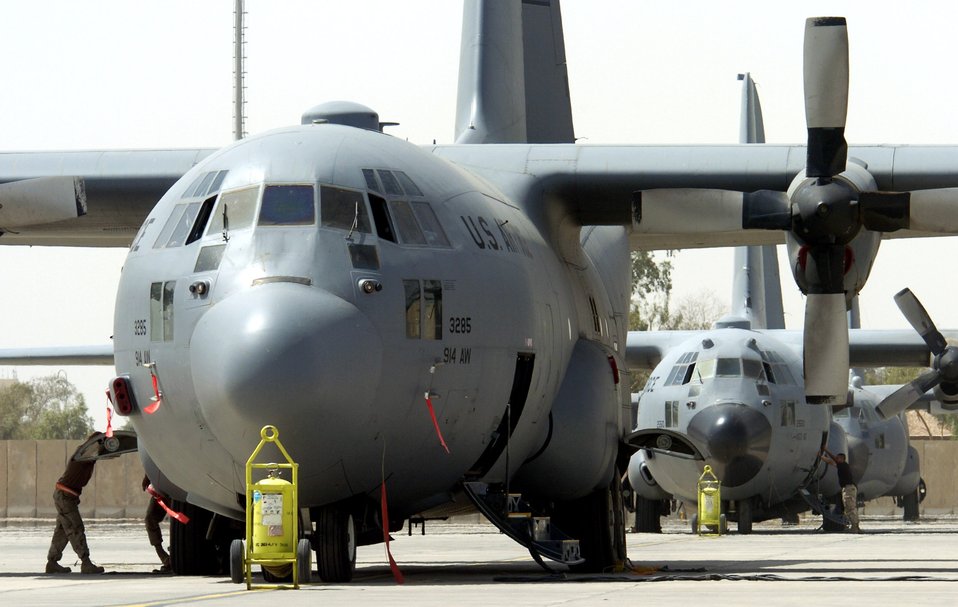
Maintenance unit keeps aircraft flying

Airmen from the 777th Expeditionary Airlift Squadron prepare a C-130 Hercules for takeoff from Balad Air Base, Iraq, on Wednesday, May 17, 2006. The unit has flown more than 3,700 sorties, moved more than 54,200 people and 11,790 tons of cargo. The unit comprises active duty, Guard and Reserve aircraft and Airmen.